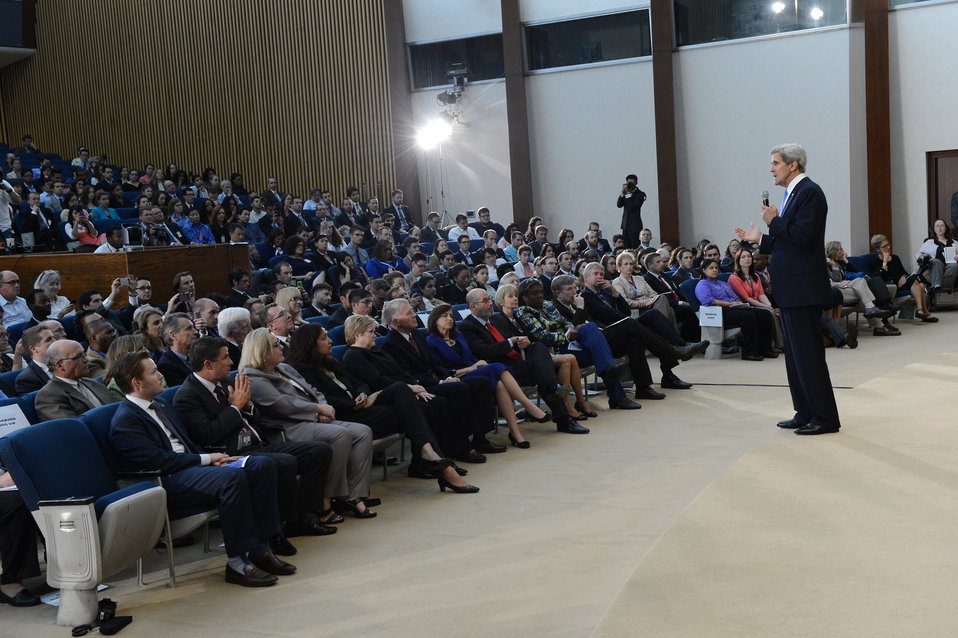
Secretary Kerry Delivers Remarks at the Gays and Lesbians in Foreign Affairs Agencies Pride Event

U.S. Secretary of State John Kerry delivers remarks at the Gays and Lesbians in Foreign Affairs Agencies (GLIFAA) Pride Event at the U.S. Department of State in Washington, D.C., on June 19, 2013.